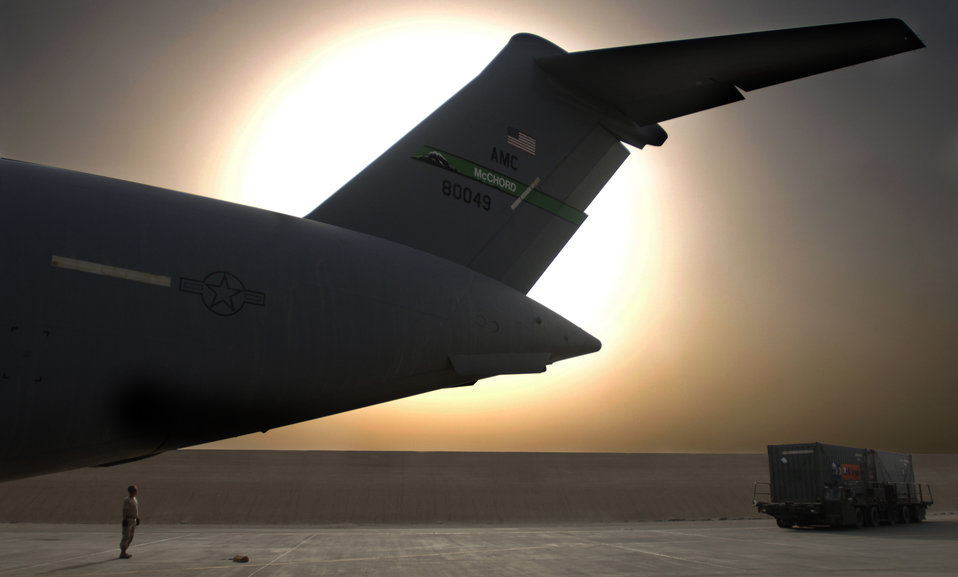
CENTAF Airpower Summary for March 12, 2007

An aerial porter stands by to marshal an aircraft loader into the back of a C-17 Globemaster III. Approximately 2.1 million pounds of cargo are loaded per week. The aerial porter's mission supports the bigger picture of Operation Achilles, a campaign to create a secure environment and better quality of life for Afghan citizens.